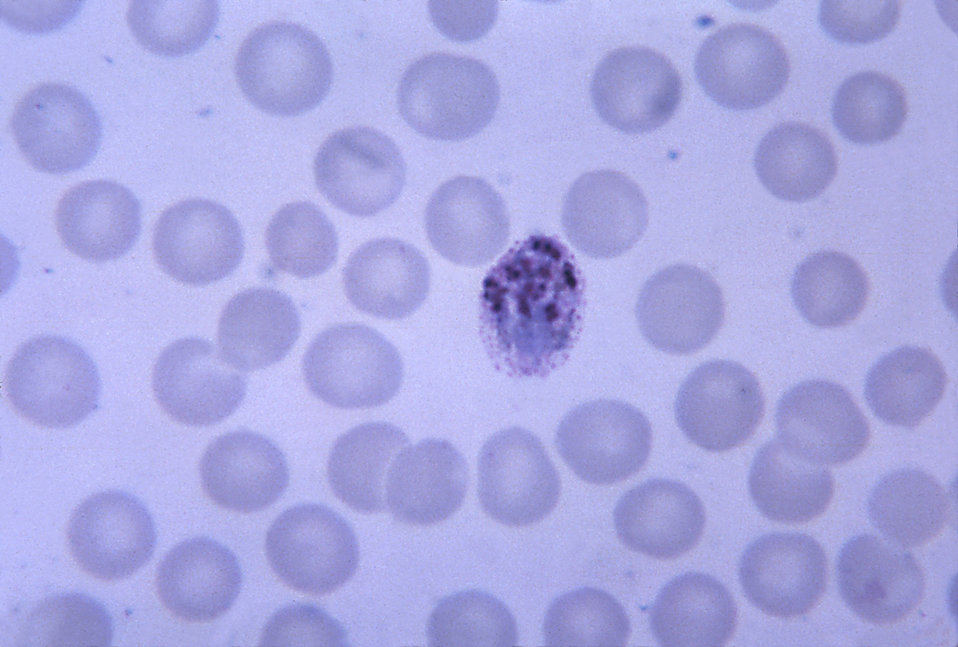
This thin film micrograph reveals an old though still immature Plasmodium vivax schizont; Mag. 1125X.